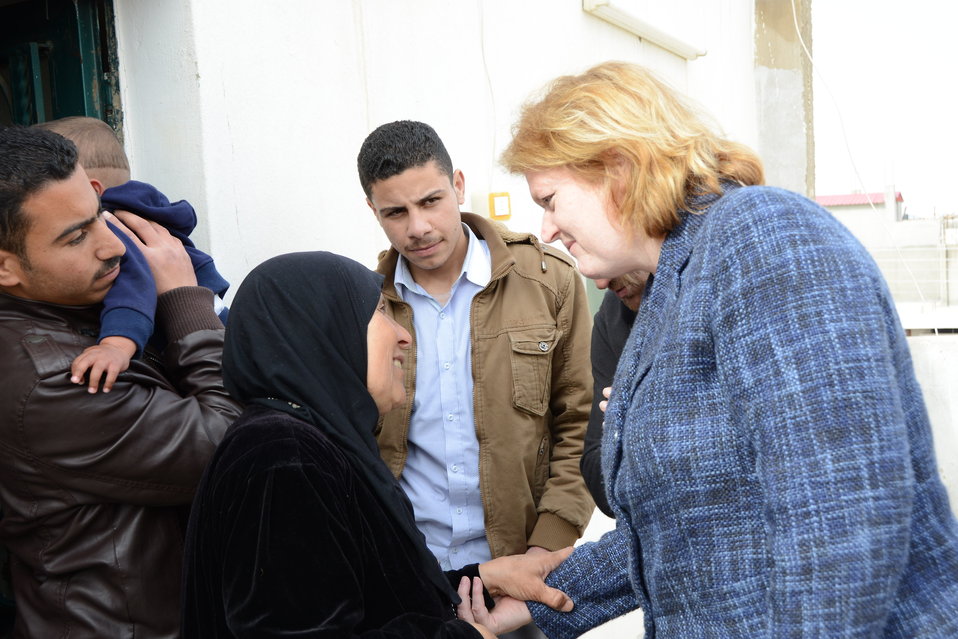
Assistant Secretary Richard Interacts With Syrian Refugees

Assistant Secretary of State for Population, Refugees, and Migration Anne Richard interacts with Syrian refugees in Jordan on January 28, 2013.